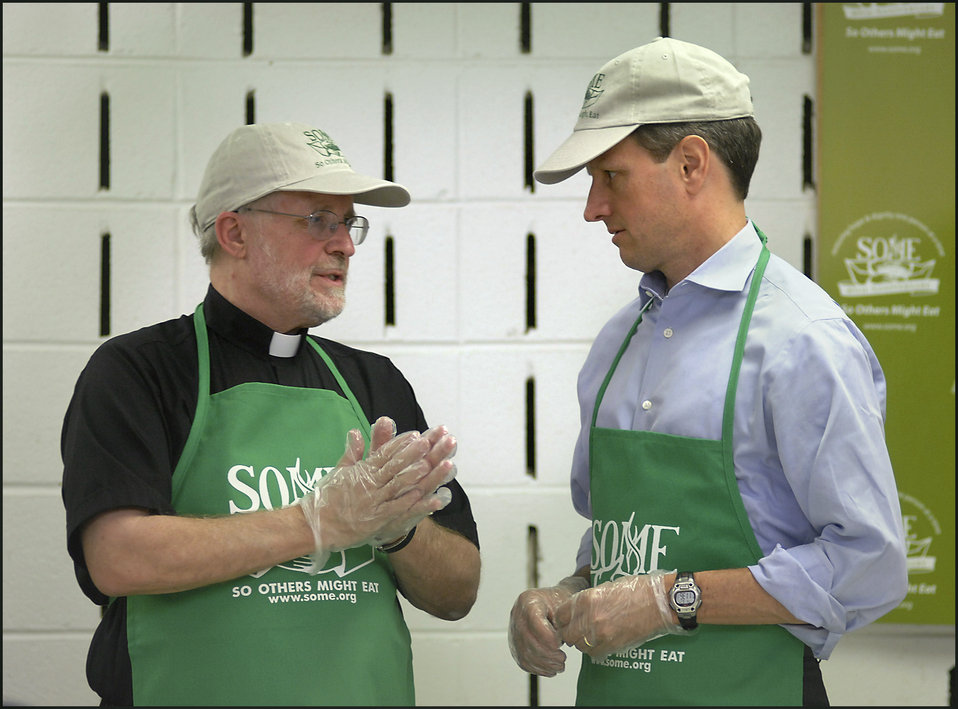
United We Serve at SOME: June 25, 2009

Secretary Geithner speaking to President Father John Adams at So Others Might Eat (SOME), a recipient of investments through a Washington, DC area Community Development Financial Institution on June 25, 2009.